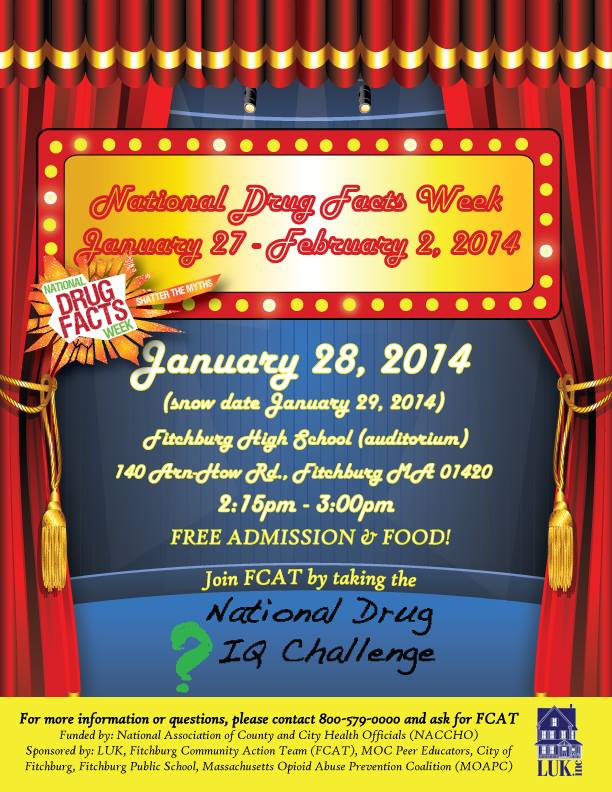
Take the IQ Challenge in Fitchburg!

Fitchburg Community Action Team (FCAT) held an after school IQ challenge event as part of its participation in National Drug Facts Week. FCAT joins teens across the U.S. in week-long effort to shatter the myths on drugs Fitchburg, MA. — As part of the NDFW celebration, Fitchburg students hosted a presentation, designed by youth, for youth, to increase awareness of drugs and drug abuse.
Students held a special community assembly at Fitchburg High School.